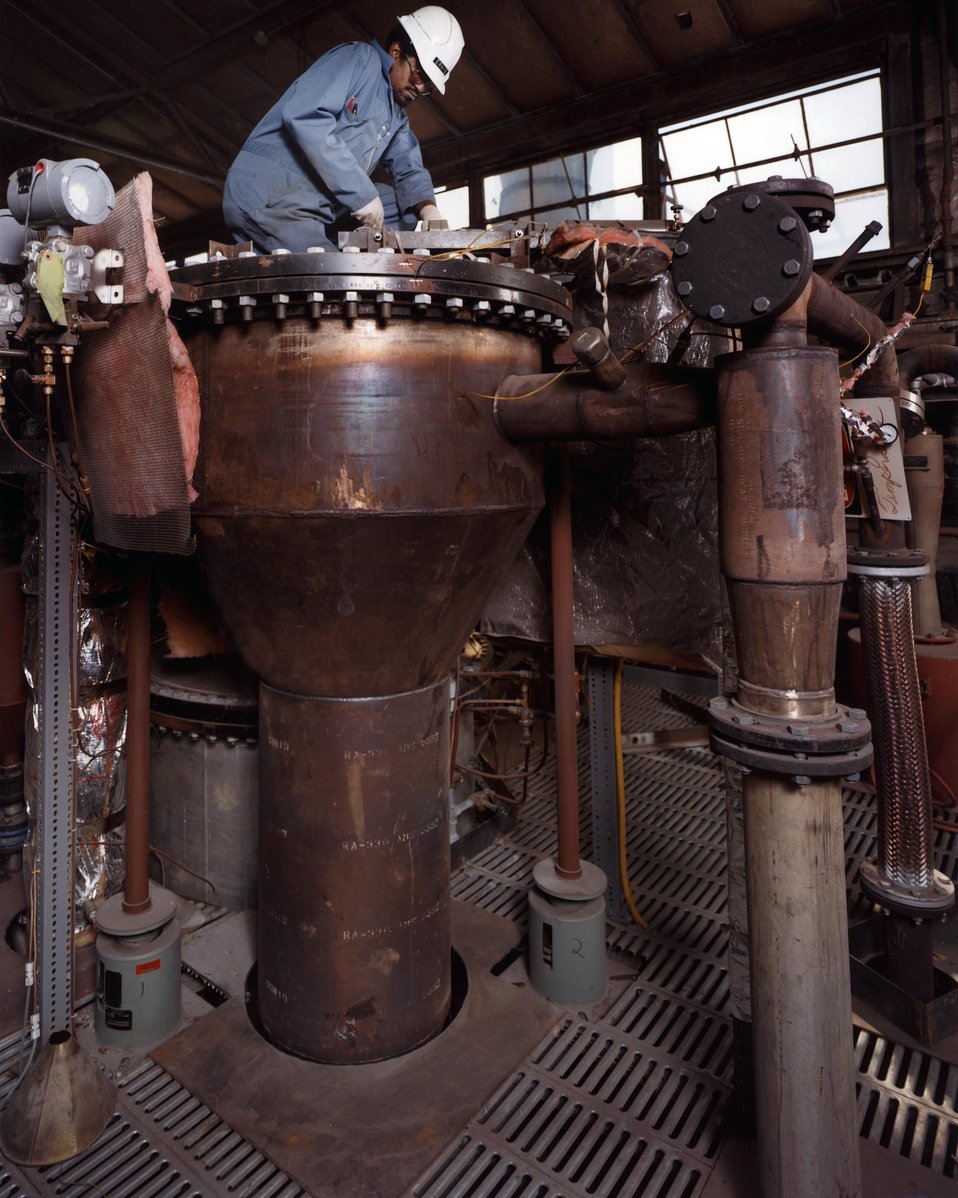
THE DISENGAGES, SHOWN HERE, SEPARATES SAND FROM PRODUCT GAS FOR RETURN TO THE COMBUSTOR.

THE MULTI-SOLID FLUIDIZED-BED GASIFICATION TECHNOLOGY IS A METHOD OF CONVERTING BIOMASS, E.G., WOOD CHIPS, INTO METHANE-RICH GAS THAT COULD BE USED IN PLACE OF NATURAL GAS.THE METHOD USES A CHEMICAL CATALYST IN A REACTOR SYSTEM TO GASIFY BIOMASS. THIS REACTOR IS LESS COMPLEX IN DESIGN THAN A COAL GASIFICATION PROCESS AND ALLOWS THE USE OF SMALLER UNITS.